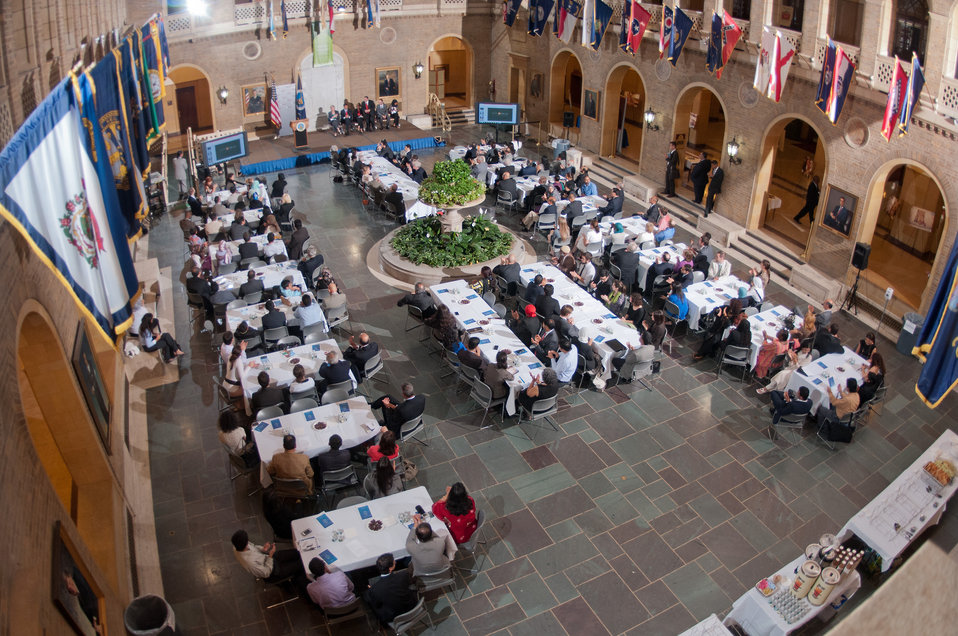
Guests applaud the viewing of Ridwan Adhami's multimedia presentation “Scars and Smiles” at the Iftar event, co-sponsored by the Iftar celebration, co-sponsored by the U.S. Department of Agriculture, U.S. Agency for International Development (USAID) and Islamic Relief USA, on Tuesday, August 7, 2012, in the USDA Whitten Building, in Washington, D.C. Ramadan is the month of fasting, intensive prayer, sacrifice and worship for Muslims around the world. Throughout this month, Muslims fast during the day, abstaining from consuming food from dawn to dusk and using this time to purify spiritually. Fasting reminds Muslims of the poverty and hunger suffered by many in the United States and worldwide. It is a connection with those who are hungry not through devotion, but through the many global factors that lead to hunger and famine. Iftar is the meal at which Muslims break their fast at sunset, usually by eating dates, according to the Prophetic tradition.